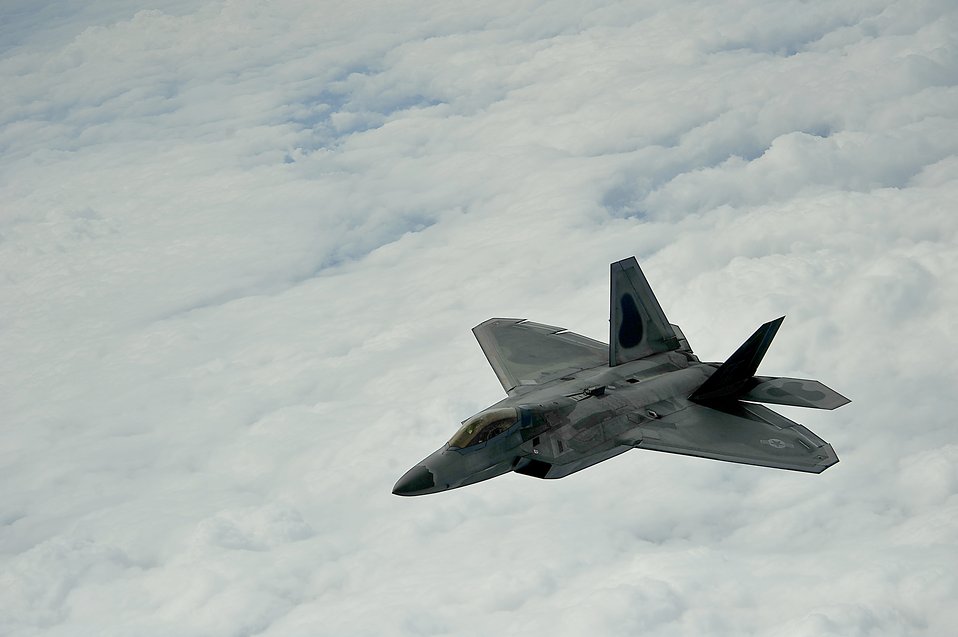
F-22 Raptor

A 1st Fighter Wing's F-22 Raptor from Joint Base Langley-Eustis, Va. pulls away from a KC-135 Stratotanker with the 756th Air Refueling Squadron, Joint Base Andrews Naval Air Facility, Md. after refueling off the east coast on May 10, 2012. The first Raptor assigned to the Wing arrived Jan. 7, 2005. This aircraft was allocated as a trainer, and was docked in a hanger for maintenance personnel to familiarize themselves with its complex systems. The second Raptor, designated for flying operations, arrived Jan. 18, 2005. On Dec. 15, 2005, Air Combat Command commander, along with the 1 FW commander, announced the 27th Fighter Squadron as fully operational capable to fly, fight and win with the F-22. (U.S. Air Force Photo by: Master Sgt. Jeremy Lock)